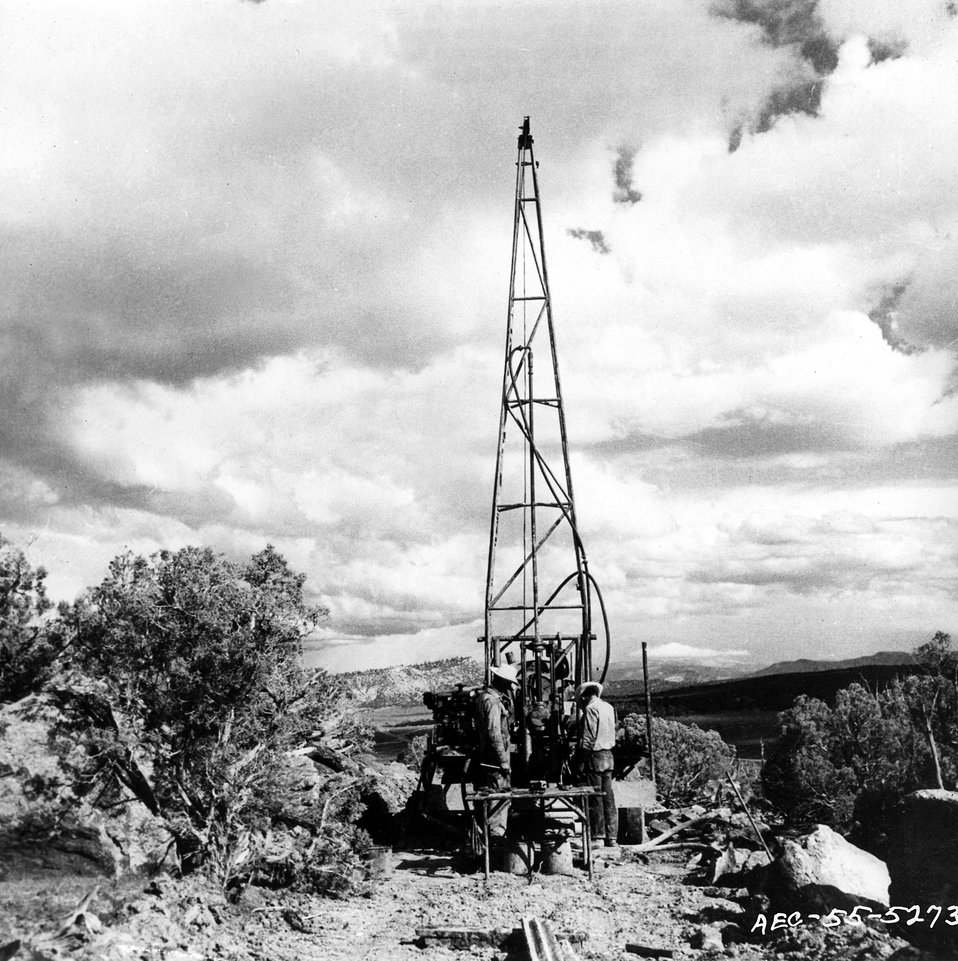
After a uranium claim has been properly located, and the location certificate filed, the owner usually contracts to have the area explored by using a diamond-drilling rig, such as shown here. c. 1955